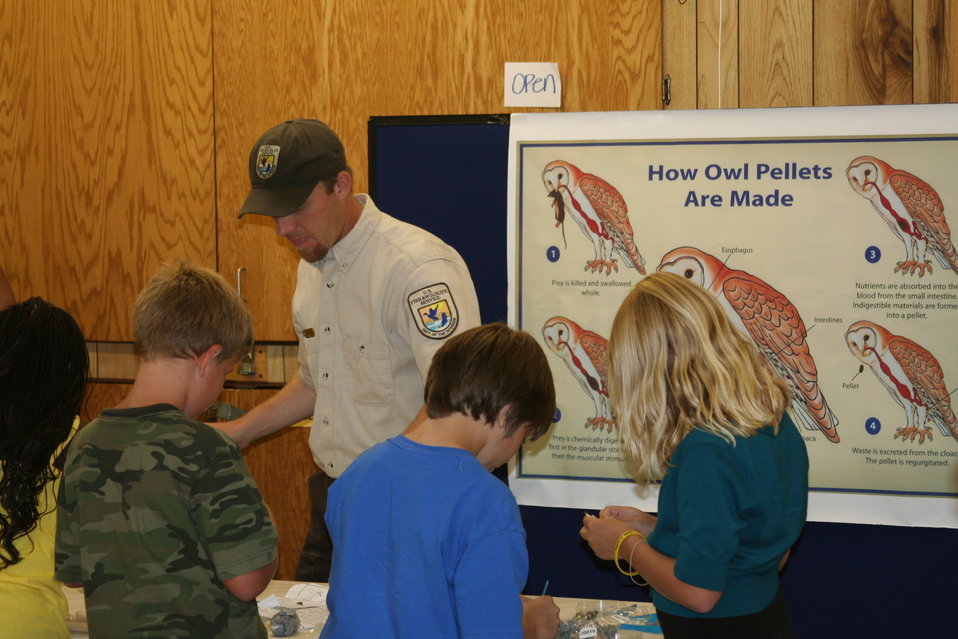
Creatures of the Night 2011

Biologist Brent Jamison teaching children about how owls digest their food.